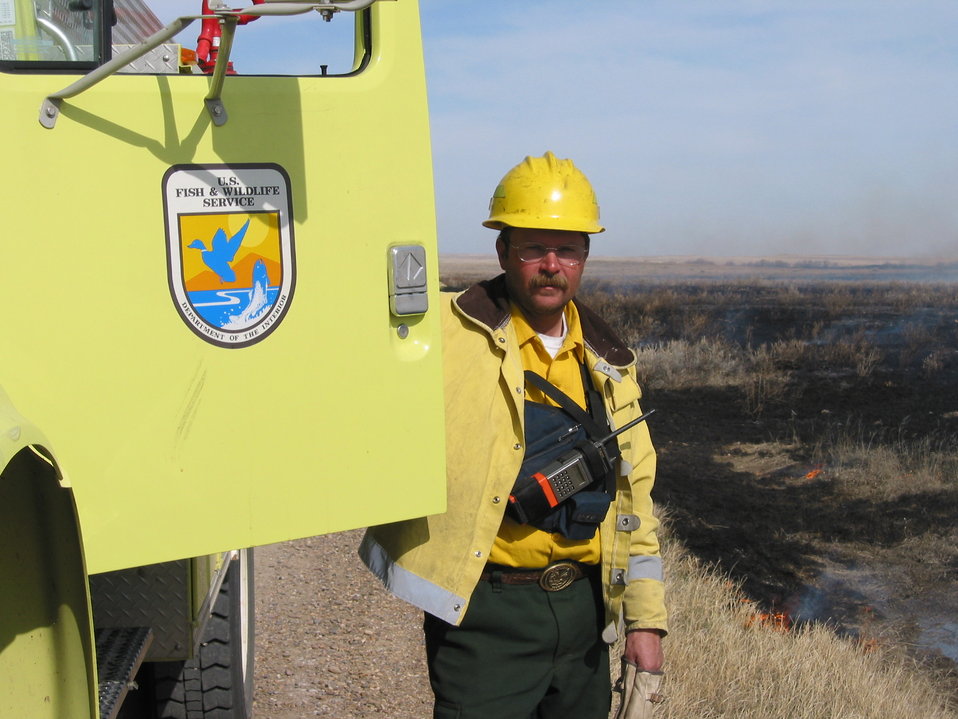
Prescribed Fire

A CMR employee drives a fire truck while assisting with a prescribed fire on a refuge.